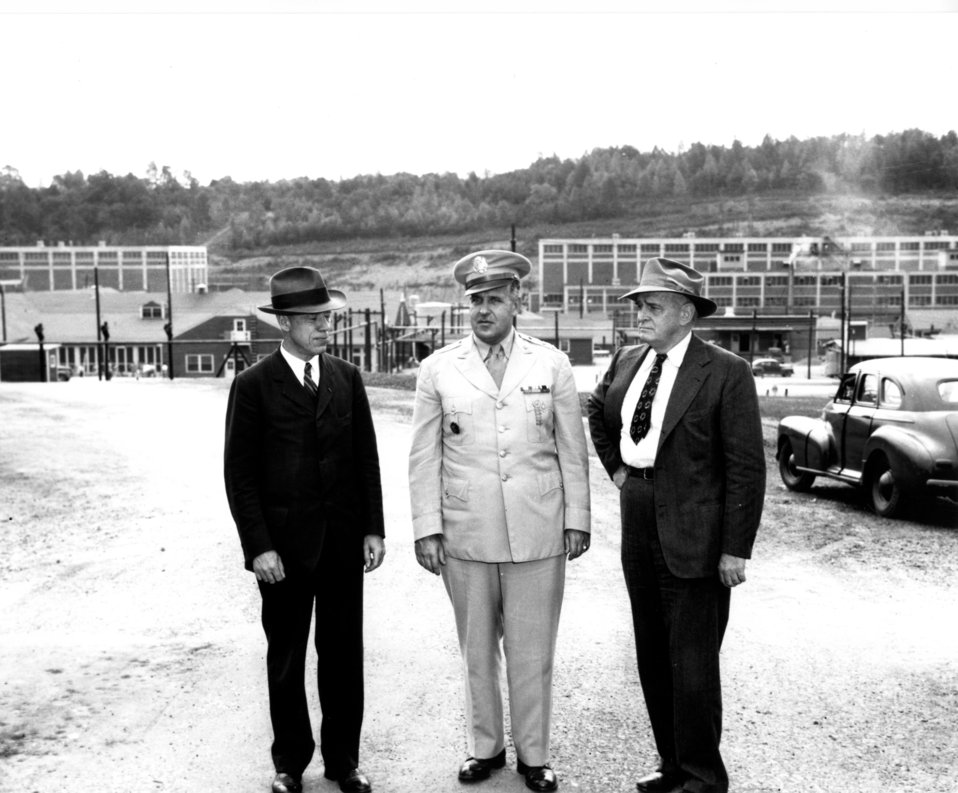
Notable persons at Oak Ridge